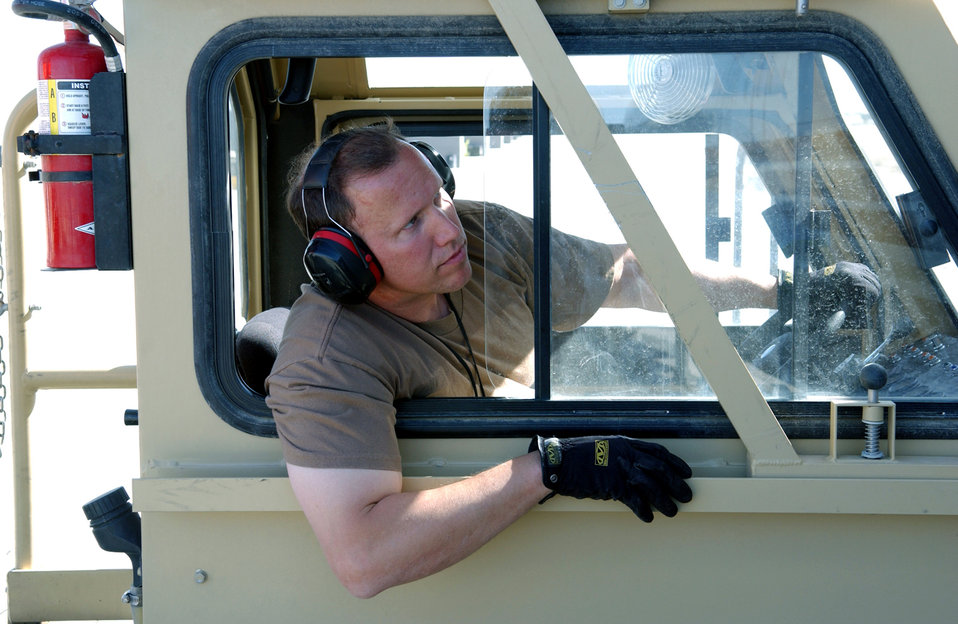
Total-force effort

BAGRAM AIR BASE, Afghanistan -- Staff Sgt. John Costello watches for instructions as he drives a new-generation small loader. The loader can carry up to 25,000 pounds. Sergeant Costello is assigned to the 455th Expeditionary Logistics Readiness Squadron here. He is deployed from the 109th Aerial Port Flight at Stratton Air National Guard Base, N.Y.